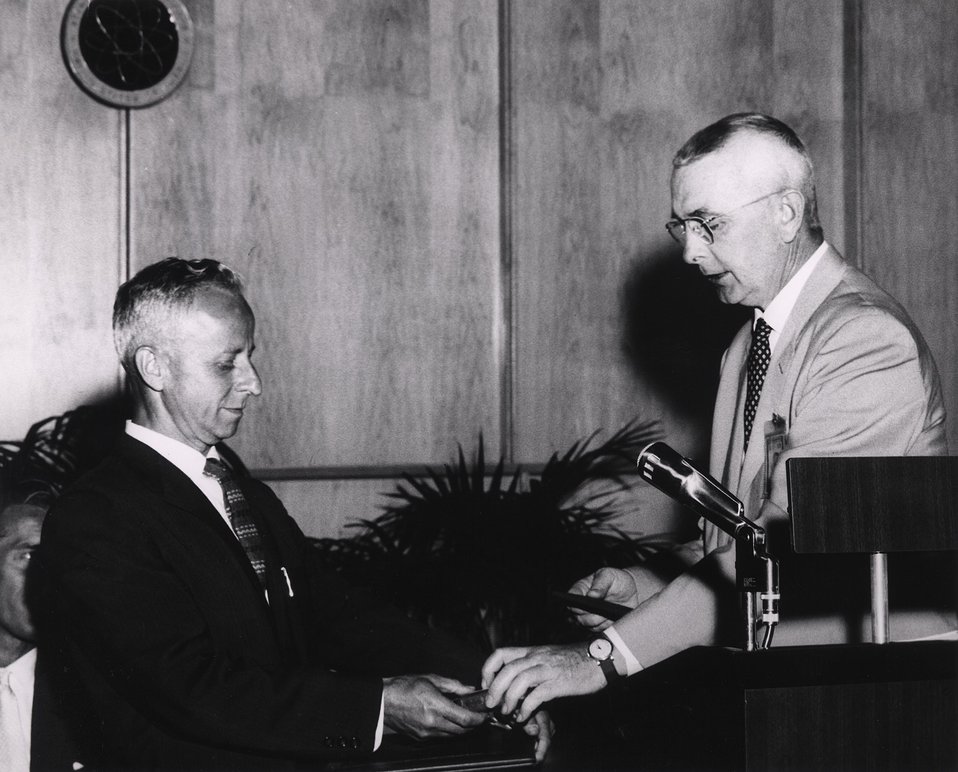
First Lawrence Award Ceremony, in Washington, on June 27, 1960. John S. Graham.